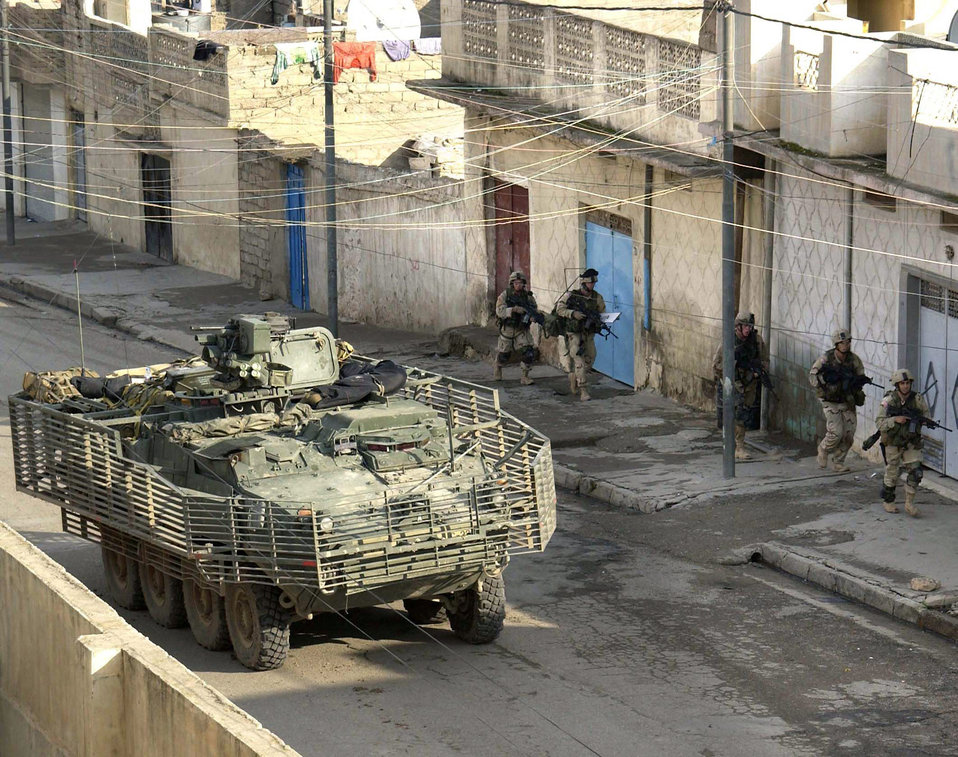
Soldiers, Airmen train together for urban warfare

MOSUL, Iraq -- Stryker brigade combat team Soldiers search for insurgents here recently.